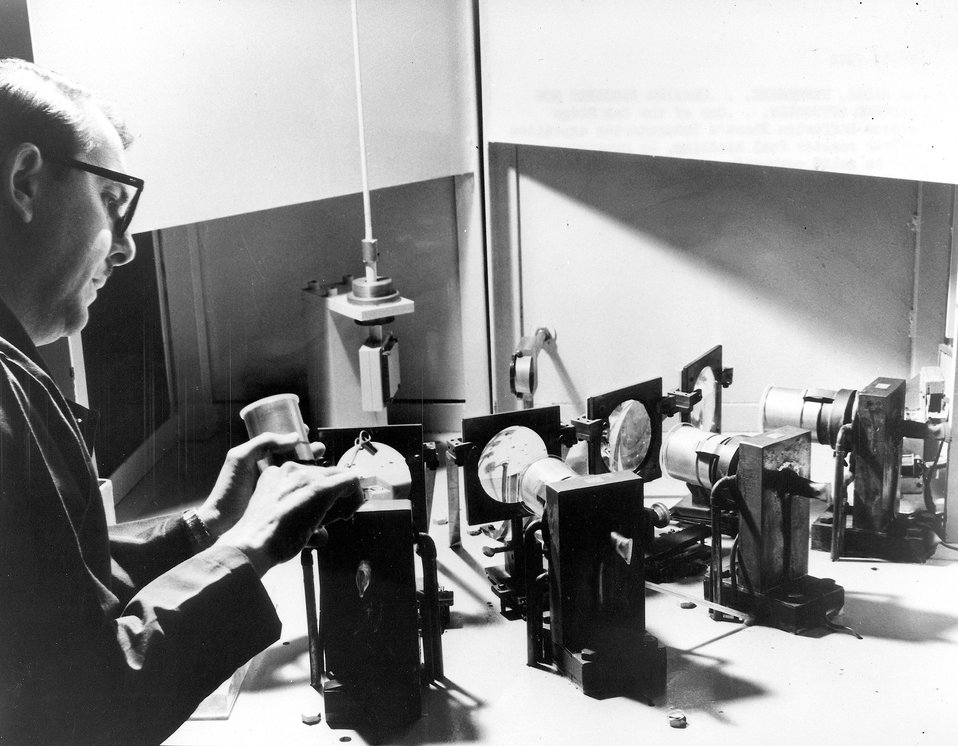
One of the Oak Ridge Gaseous Diffusion Plant's Laboratories expedites nuclear reactor fuel handling, by measuring U235 in solid compounds with an optical spectrograph it developed for this purpose.